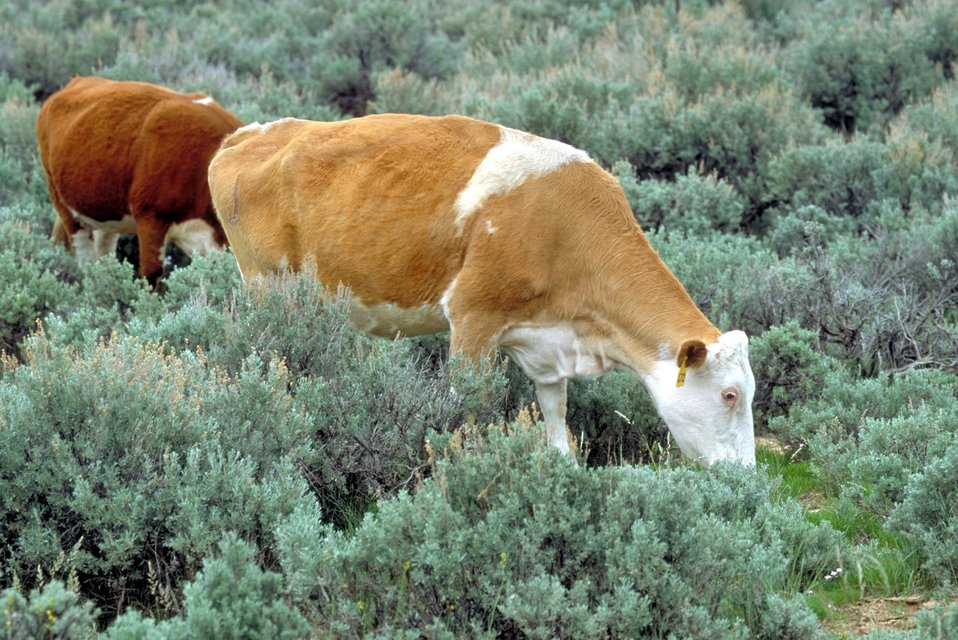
Livestock grazing on BLM lands near Price, Utah.